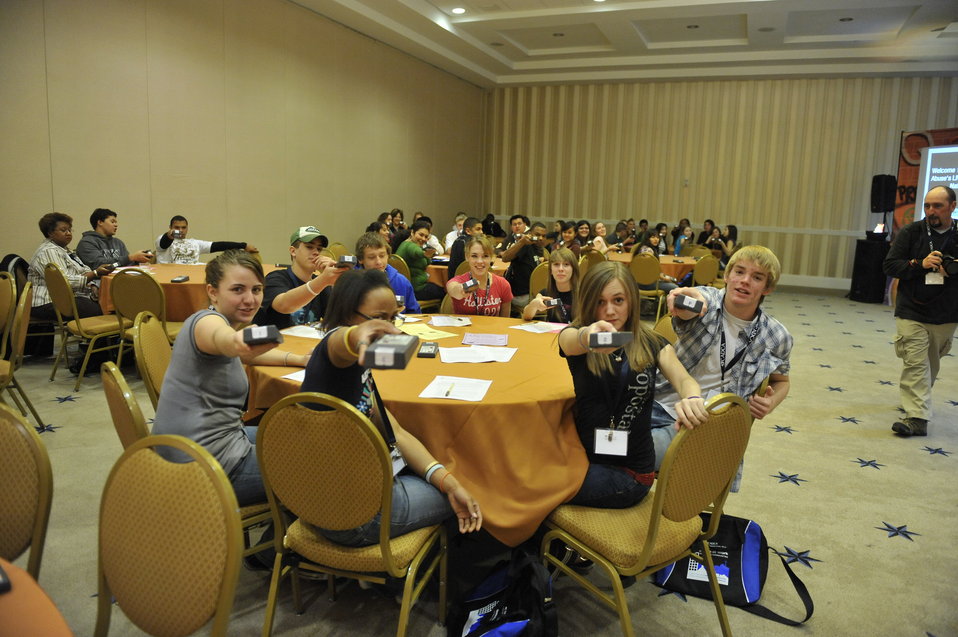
CADCA youth help shatter the myths about drugs and drug abuse at CADCA’s National Leadership Forum.